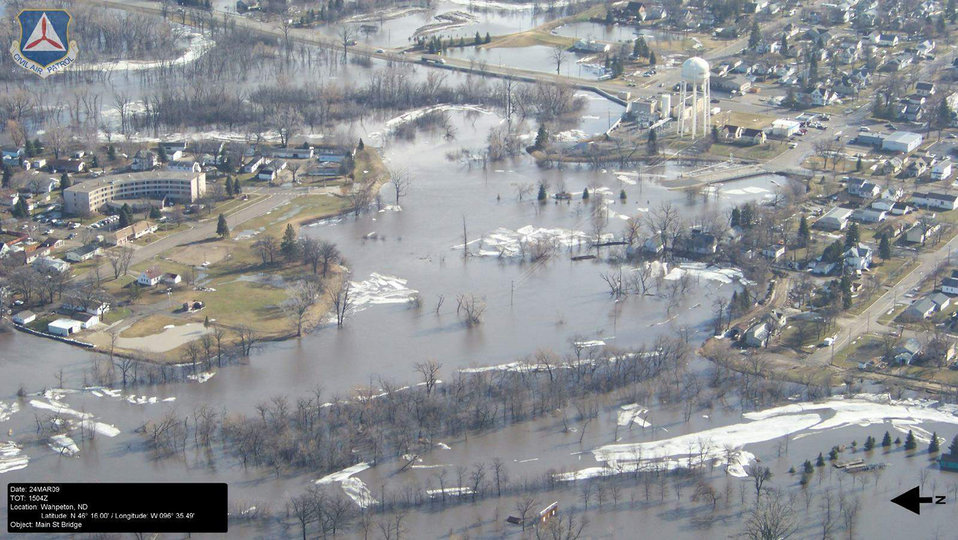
Auxiliary officials play important role in North Dakota floods

This visual image from Air Force Auxiliary officials show damage done by flood waters along the Red River in North Dakota. Air Force Auxiliary officials have flown more than 30 sorties and captured hundreds of visual images to give emergency responders and on-scene commanders the most up-to-date picture of the affected areas.